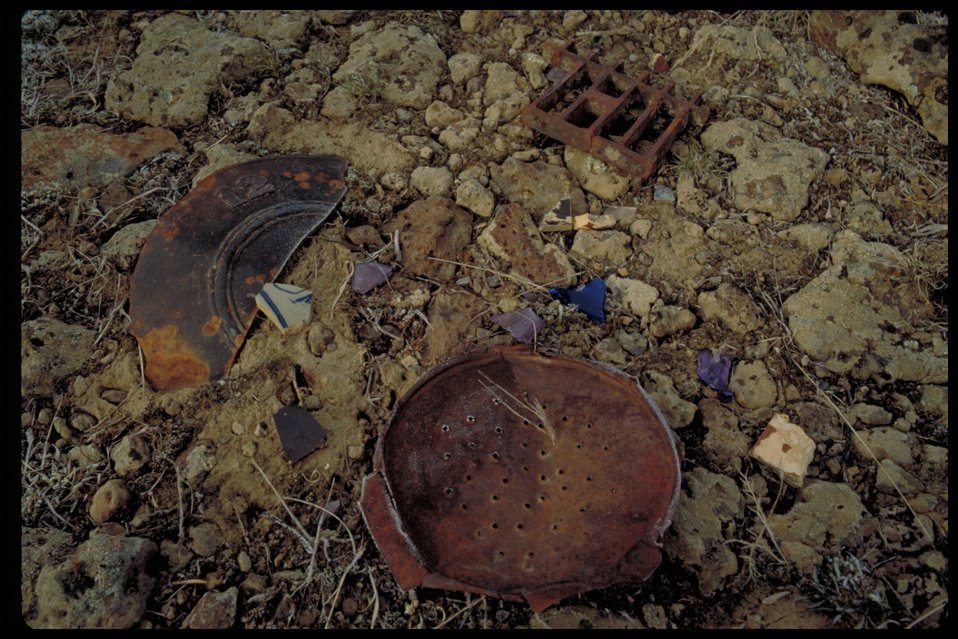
Oregon Trail at Alkali Creek Lower Snake River District